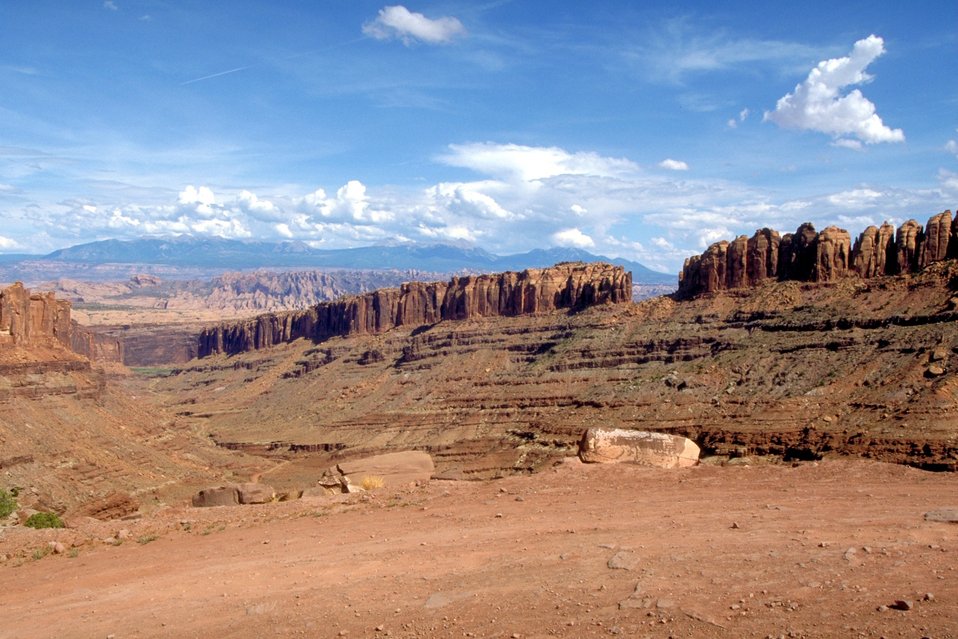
From Pucker Pass Road with La Sal Mountains in background, near Moab, Utah.